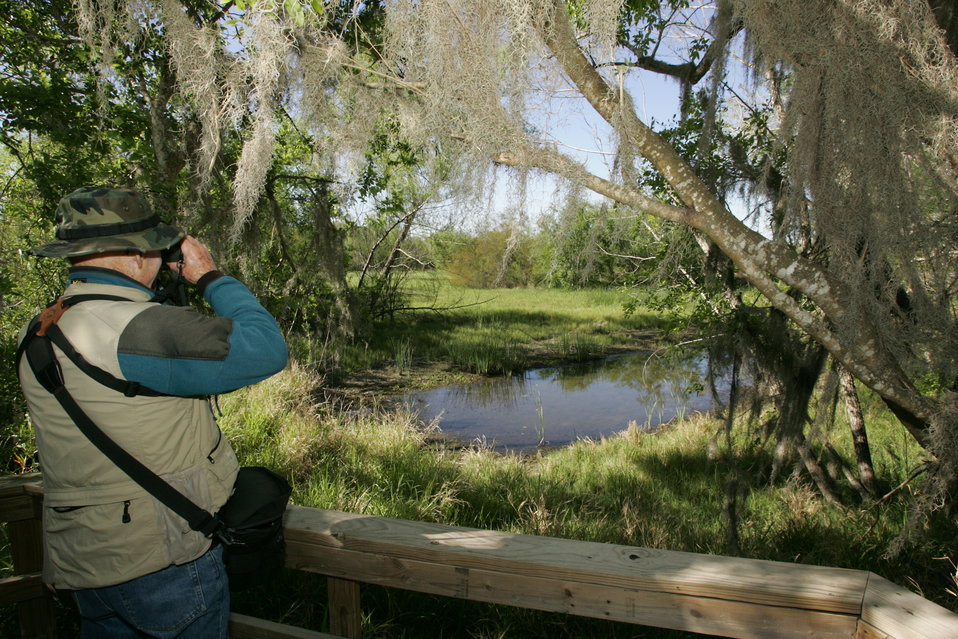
A good day at the refuge.

A visitor enjoying his favorite activity on a beautiful day; life is good.